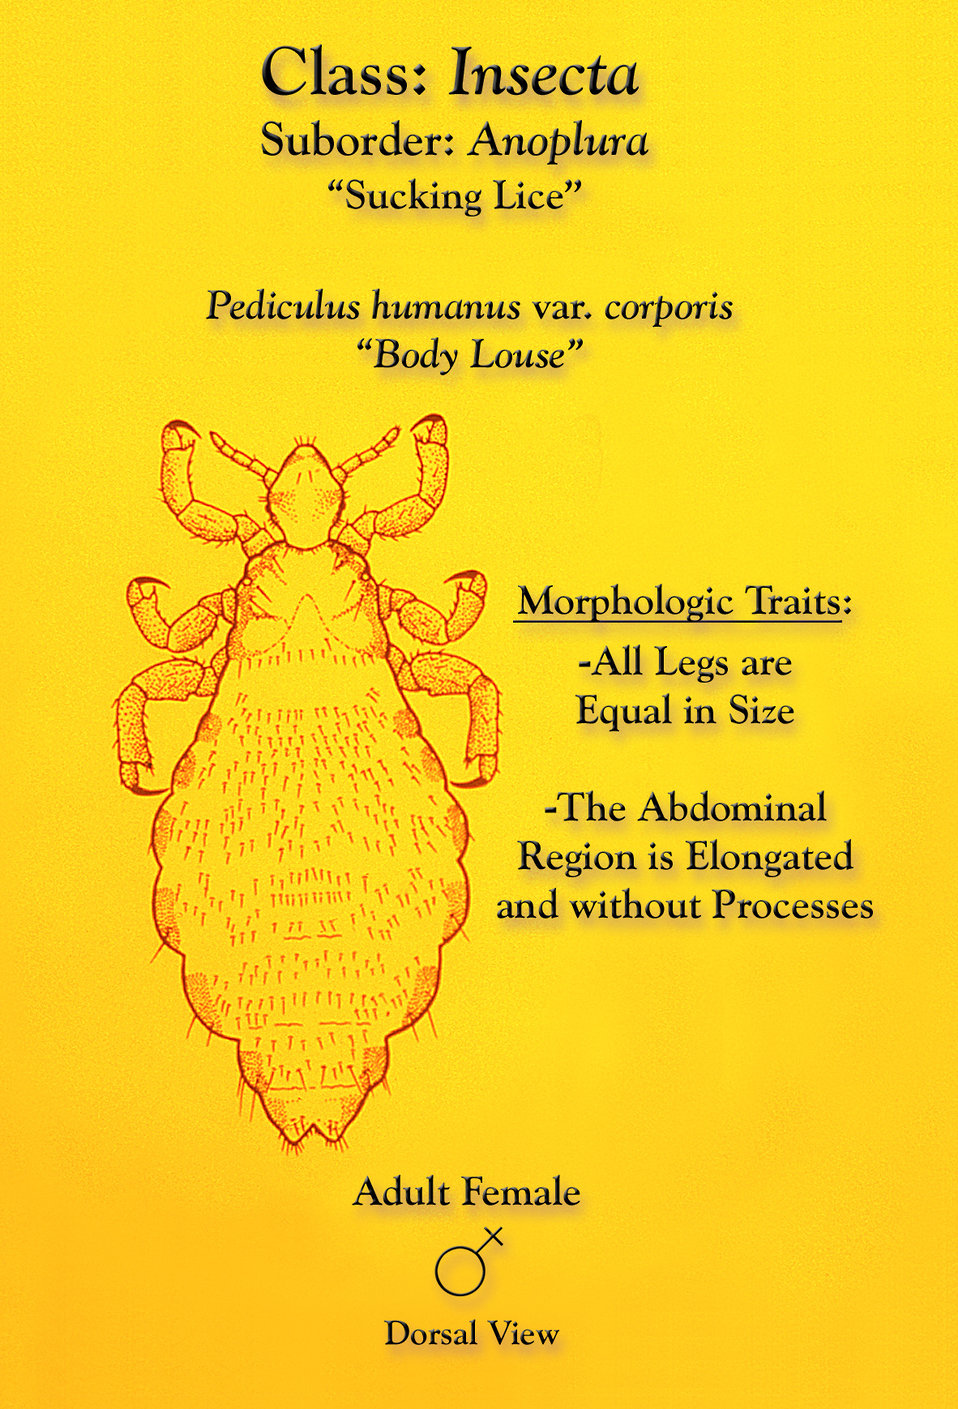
This illustration depicts a dorsal view of a female body louse, Pediculus humanus var. corporis.